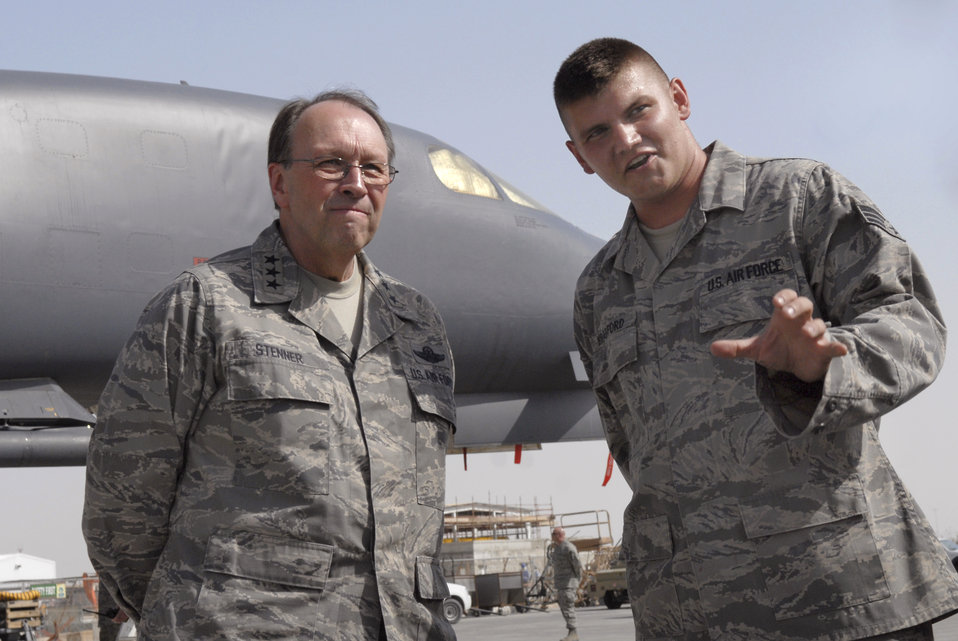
Reserve commander meets with deployed reservists

Lt. Gen. Charles Stenner, commander of Air Force Reserve Command and chief of the Air Force Reserve, discusses B-1B Lancer weapons loads April 6 with Senior Airman Timothy Bradford during a tour of an air base in Southwest Asia. General Stenner visited many areas of the base and spoke with numerous Airmen. Airman Bradford, a maintainer with the 379th Expeditionary Maintenance Squadron, is deployed from Dyess Air Force Base, Texas.